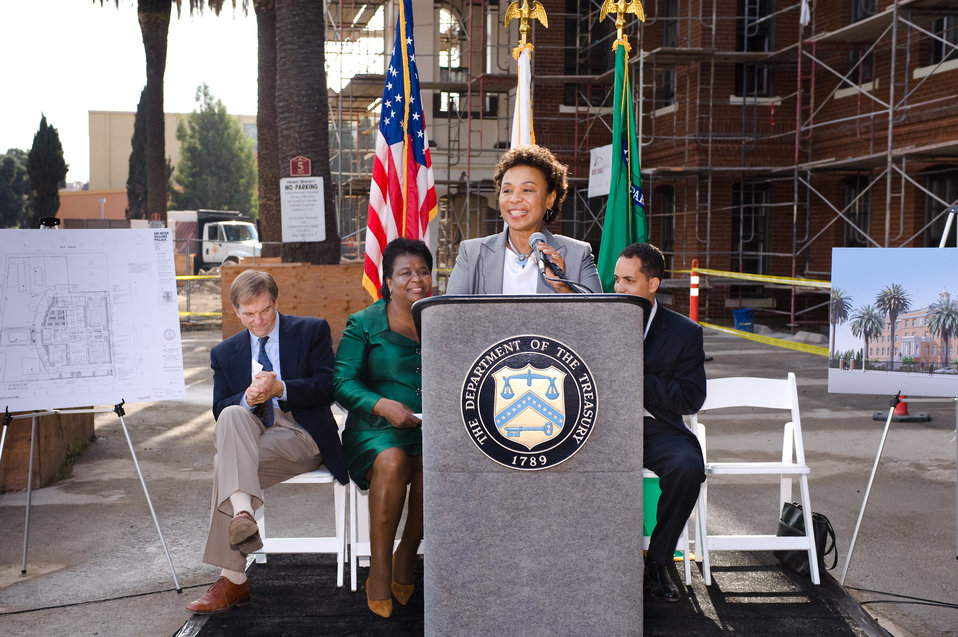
CDFI Awards for the Development of Affordable Housing in Low-Income Communities in Oakland, CA, 10/14/10

Congresswoman Barbara Lee (CA-09) delivers opening remarks at the US Department of the Treasury’s inaugural Capital Magnet Fund award announcement in Oakland, California. More than $80 million in grants were announced for affordable housing for low-income communities.